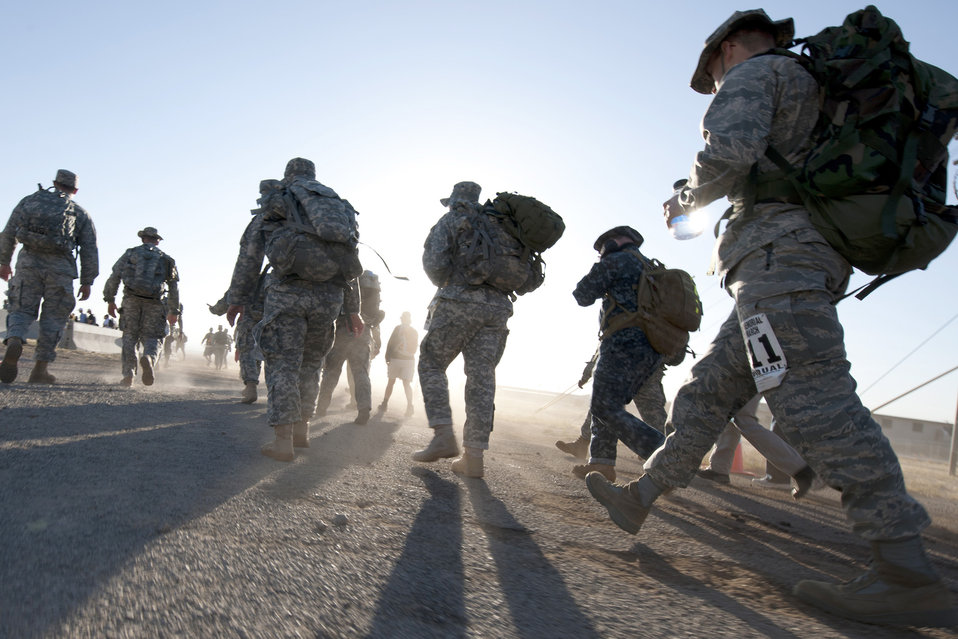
Memorial marathon eternalizes Bataan Death March

Participants of the 22nd Annual Bataan Memorial Death March imprint their footprints on the 26.2-mile desert trail March 27, 2011, at White Sands Missile Range, New Mexico. The event, attended by a record number of more than 6,000 marchers, commemorates the original Bataan Death March which occurred in the Philippines during World War II. On April 9, 1942, 75,000 Army, Army Air Corps, Navy, Marines and Filipino soldiers were surrendered to Japanese forces. Forced to march 60 miles in the sweltering heat through the Philippine jungles, thousands of soldiers died in transit to prisoner-of-war camps.